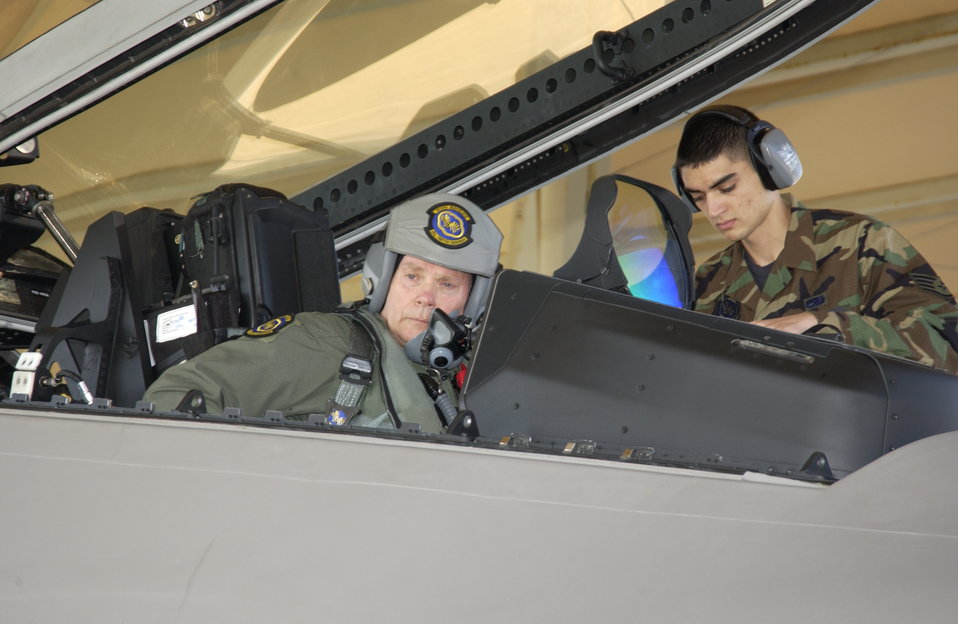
General Jumper flies F/A-22

TYNDALL AIR FORCE BASE, Fla. -- Staff Sgt. Jonathon Tringali helps Air Force Chief of Staff Gen. John P. Jumper prepare to fly in an F/A-22 Raptor here Jan. 12. The Raptor makes the ninth Air Force aircraft type the general has flown.